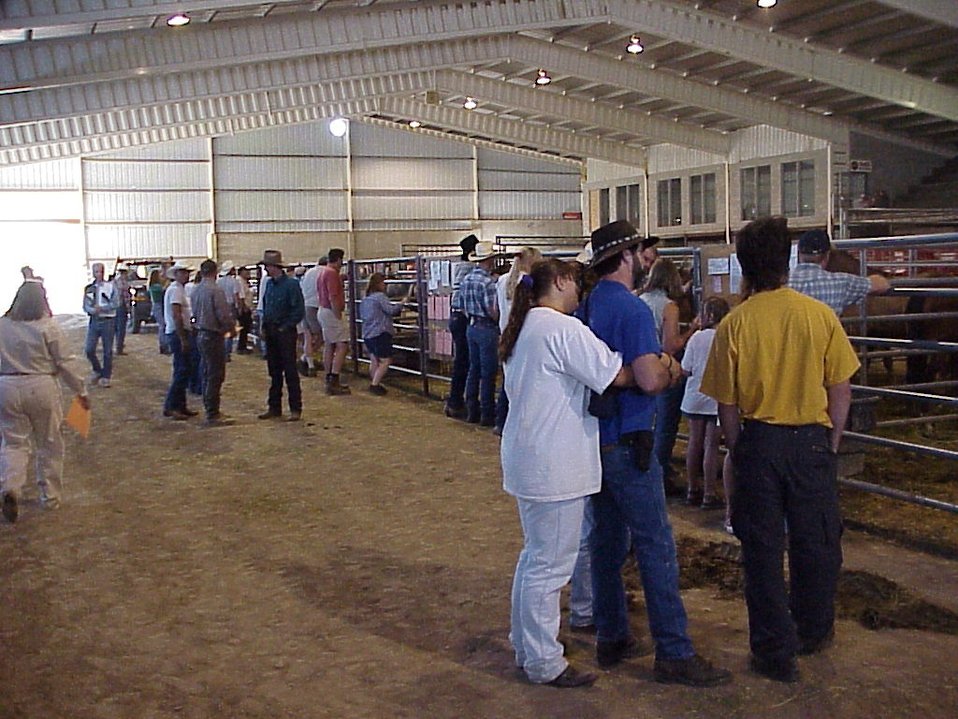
Lewiston Wild Horse and Burro Adoption Program Auction WHB indoor auction Cottonwood Field Office UCSC Upper Columbia Salmon Clearwater District